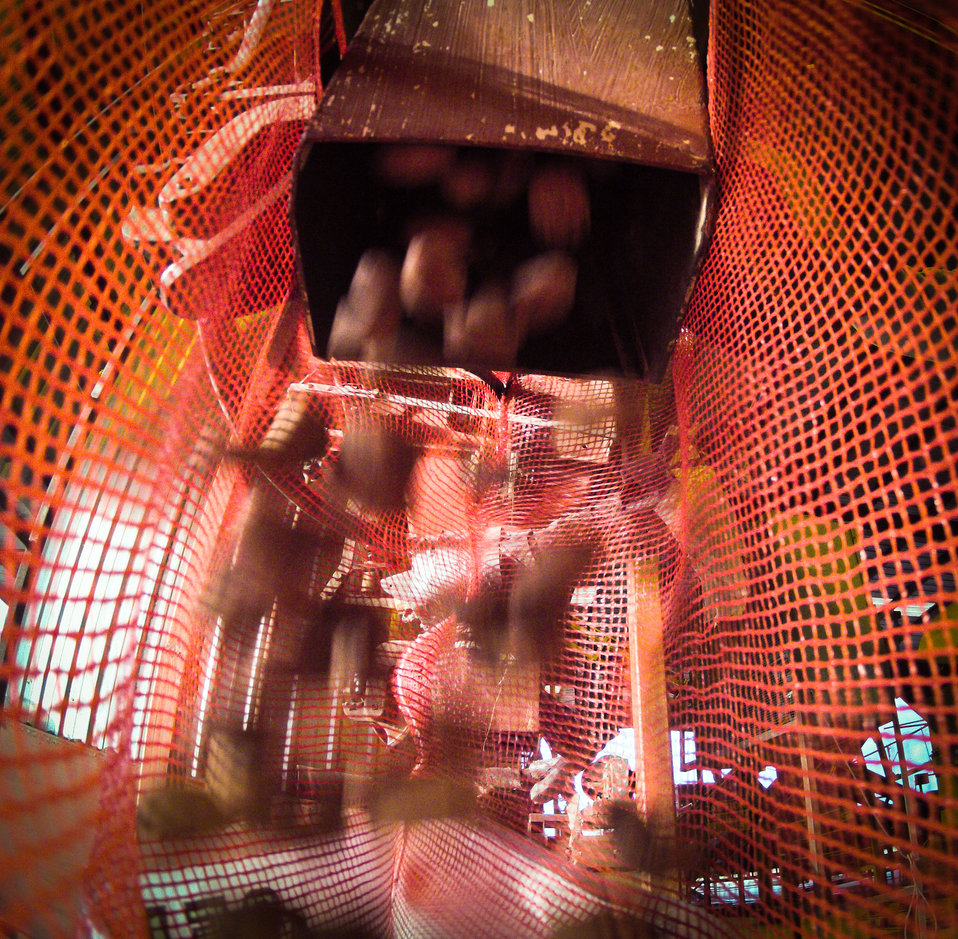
Pecan fall through a chute into 50-pound sacks at the onsite Arrowhead Farms processing facility at Crystal City, TX, on Friday, December 9, 2011. The farm has been owned by Mr. Akram Mohammad, a pecan farmer since 2005. The 719-acre farm with 10,000 trees, features some orchards with underground micro irrigation system that feeds water to the roots of 4,380 pecan trees on 146 acres. Mr. Mohammad said, “USDA (U.S. Department of Agriculture) was essential to my business and trees surviving the recent exceptional drought. The trees were stress free thanks to underground micro-irrigation. This is essential to the future growth of Texas agriculture and good for America.” U.S. Department of Agriculture’s (USDA) Environmental Quality Initiative Program (EQIP) awarded Mr. Mohammad a $130,000 grant in 2008. He provided $26,000 for the balance of the $156,000 total cost to install a 146-acre underground micro-irrigation for 4,380 trees.